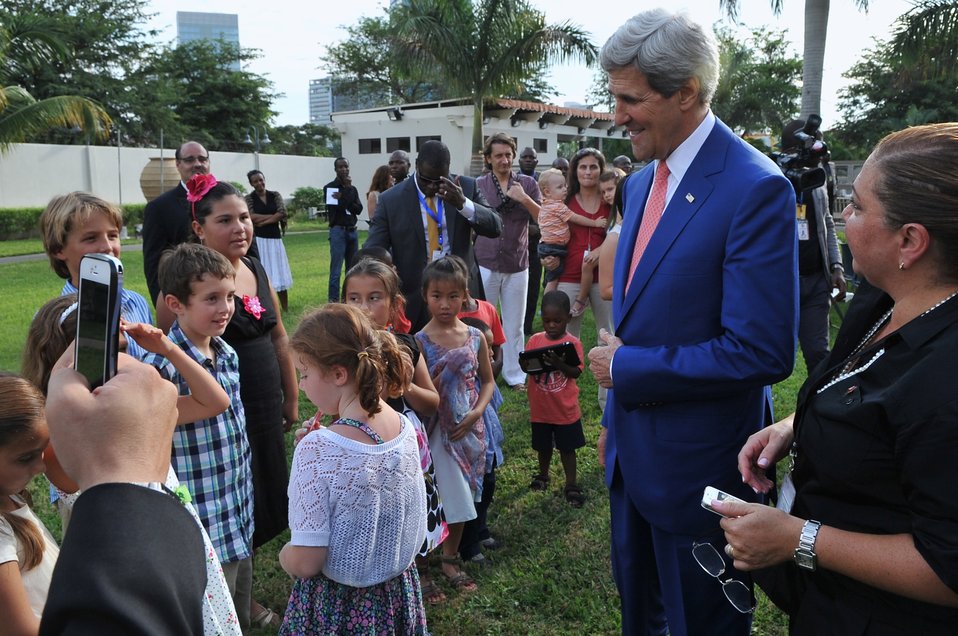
Secretary Kerry Greets Children of Embassy Luanda Staff

U.S. Secretary of State John Kerry greets the children of employees at Embassy Luanda after addressing them during a visit to Angola on May 4, 2014.